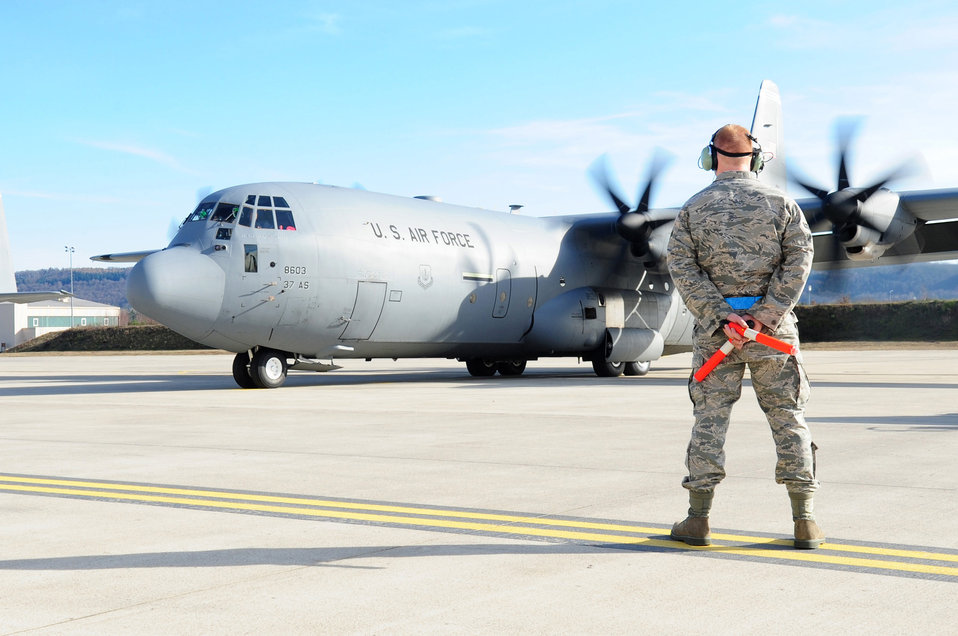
Joint Task Force Odyssey Dawn

U.S. Air Force Airman 1st Class Eric Cobaugh, 86th Aircraft Maintenance Squadron crew chief, waits to marshal a C-130J en route to support of Joint Task Force Odyssey Dawn, Ramstein Air Base, Germany, March 20, 2011. Joint Task Force Odyssey Dawn is the U.S. Africa Command task force established to provide operational and tactical command and control of U.S. military forces supporting the international response to the unrest in Libya and enforcement of United Nations Security Council Resolution 1973. UNSCR 1973 authorizes all necessary measures to protect civilians in Libya under threat of attack by Qadhafi regime forces. JTF Odyssey Dawn is commanded by U.S. Navy Admiral Samuel J. Locklear, III.